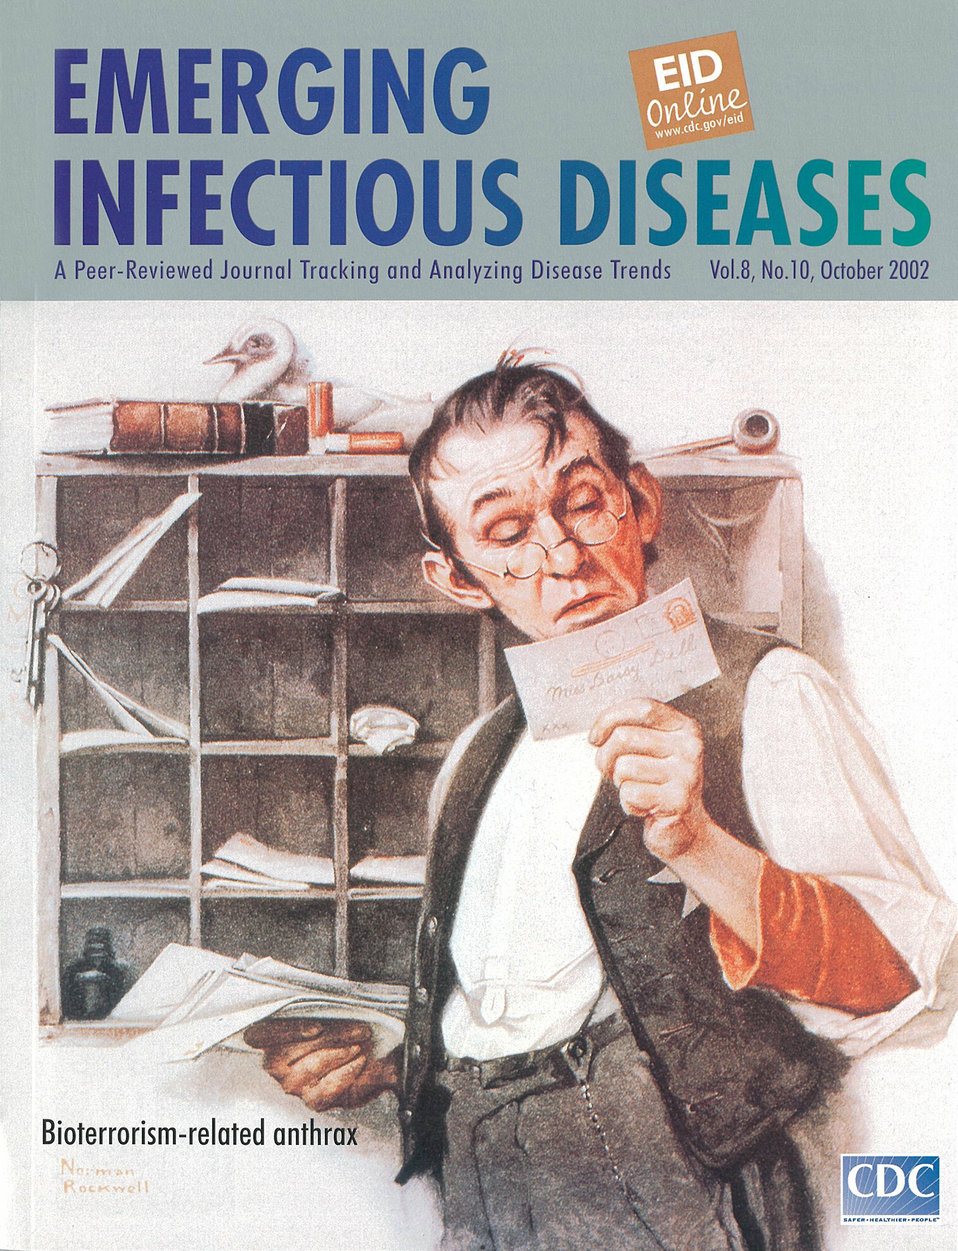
Emerging Infectious Diseases (EID) cover artwork for Volume 8, Number 10, October 2002 issue.